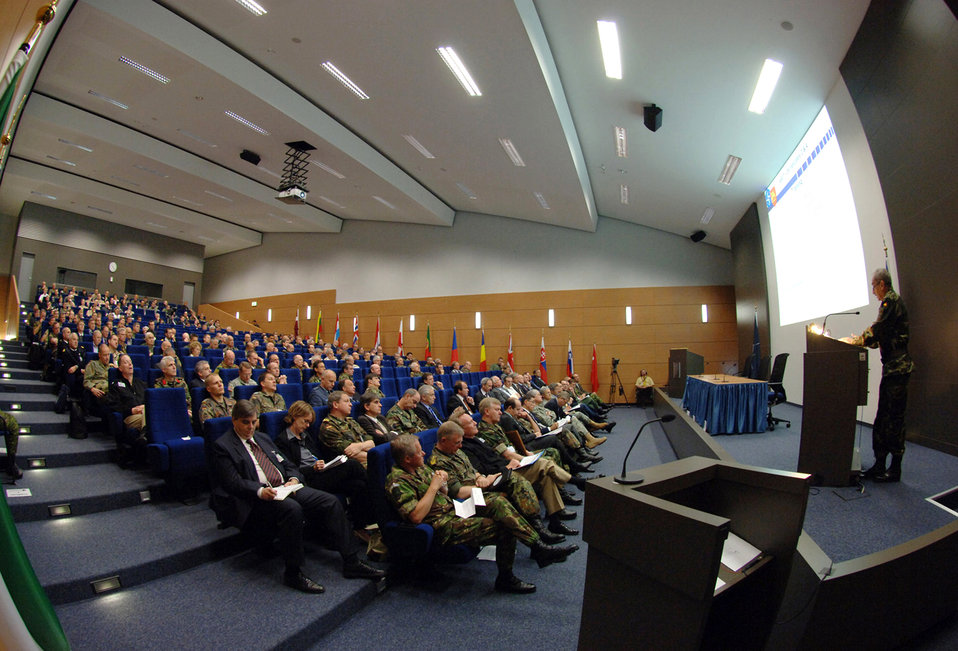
NATO Response Force works to improve communications

Representatives from 26 NATO nations plus two guest nations met May 4 at Allied Air Component Command Headquarters at Ramstein Air Base, Germany for the NATO Response Force Exercise Allied Reach '07. The exercise examined the command and control, logistics and training of the NATO Response Force at the strategic and operational levels.